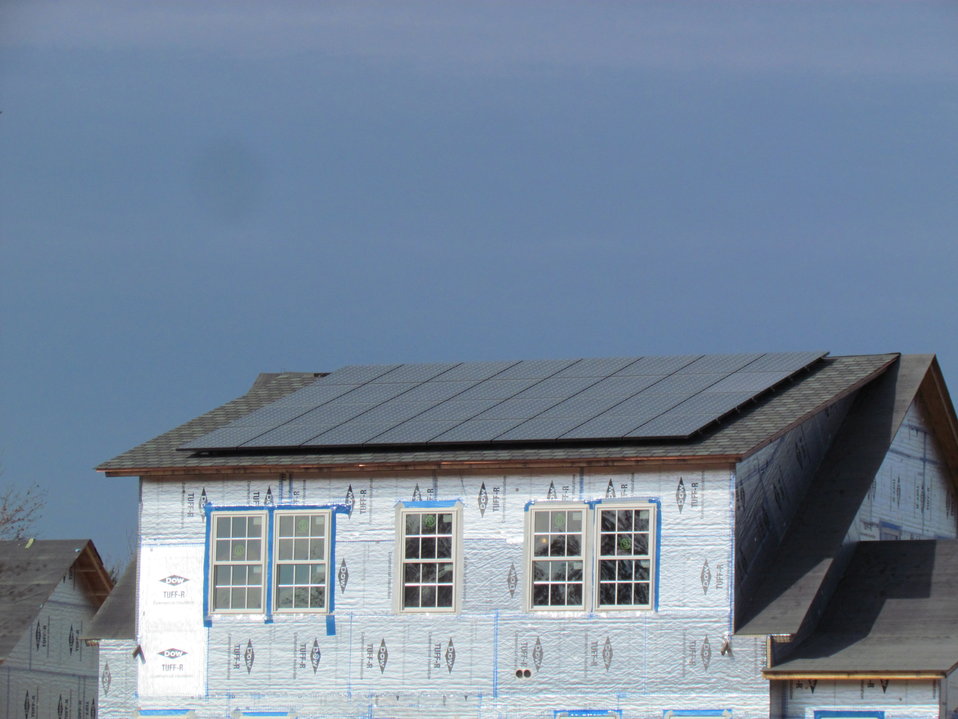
Net-Zero Energy Residential Test Facility - Photo showing completion of the photovoltaic panel installation.